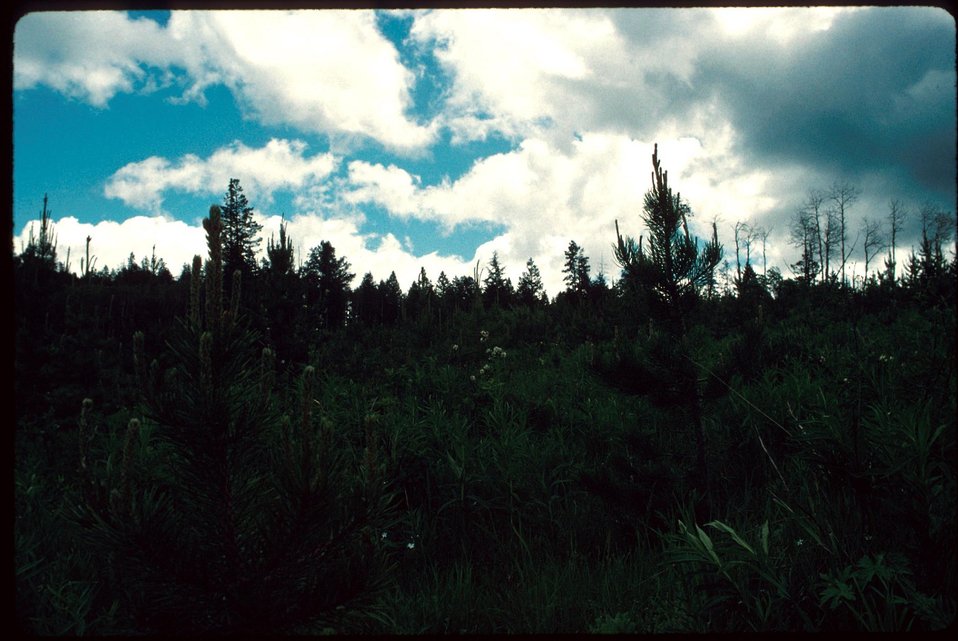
Jones Creek Medicine Lodge, Idaho Falls Planted 1986 Upper Snake River District